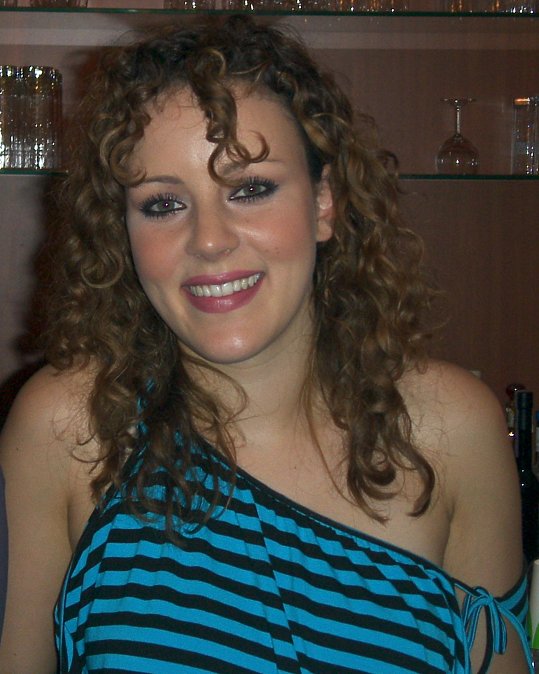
Jasmin Wagner, in Hamburg